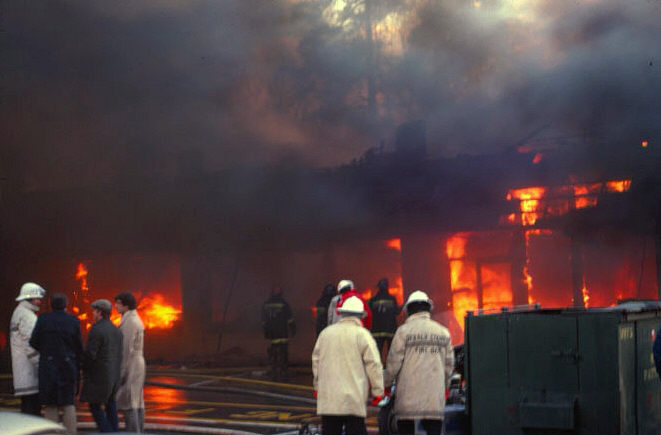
Burning building and firefighters at Emory Village, Atlanta, Georgia.